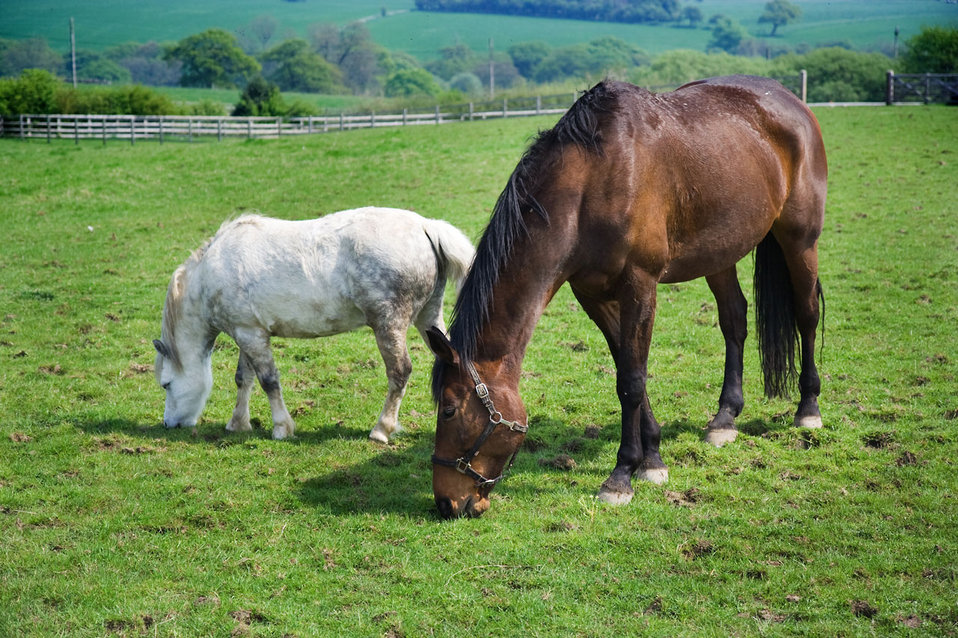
Horses

Two horses grazing.